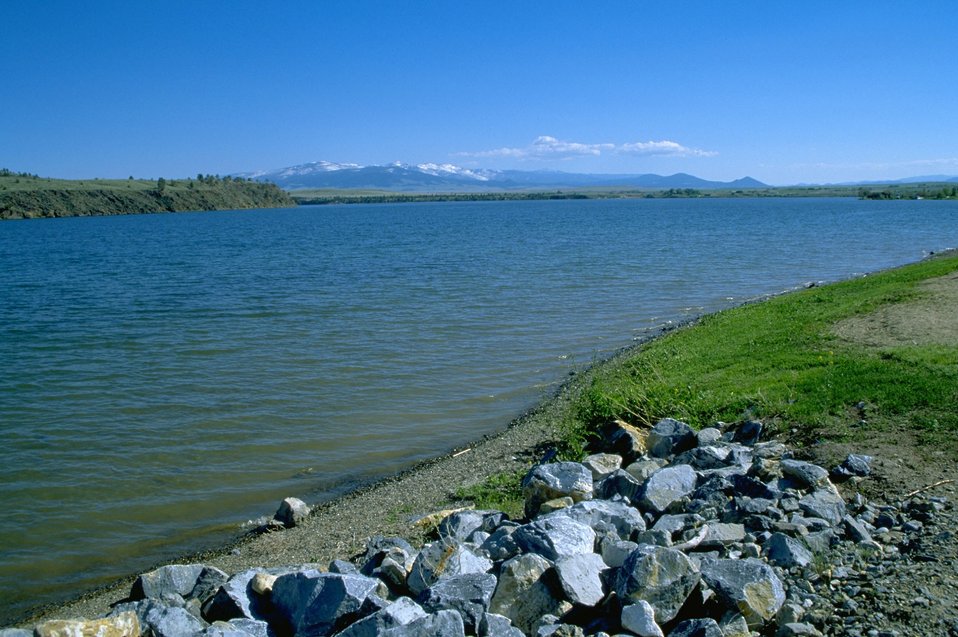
Rocks along the shoreline of Hauser Lake